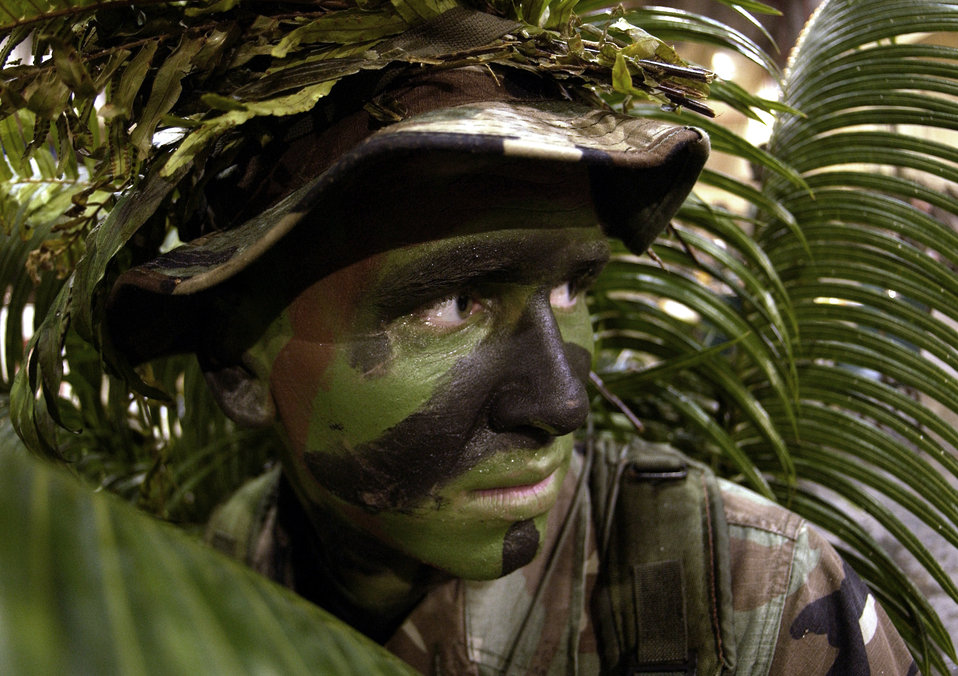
Ready for combat

ANDERSEN AIR FORCE BASE, Guam -- Airman 1st Class Nathan Fitzwater conceals himself by camouflaging in palm leaves and face paint during the first Enlisted Combat Dining In here Jan. 29. The event celebrated more than 50 years of enlisted heritage at the base. Airman Fitzwater is a Fire and Emergency Services member assigned to the 36th Civil Engineering Squadron.